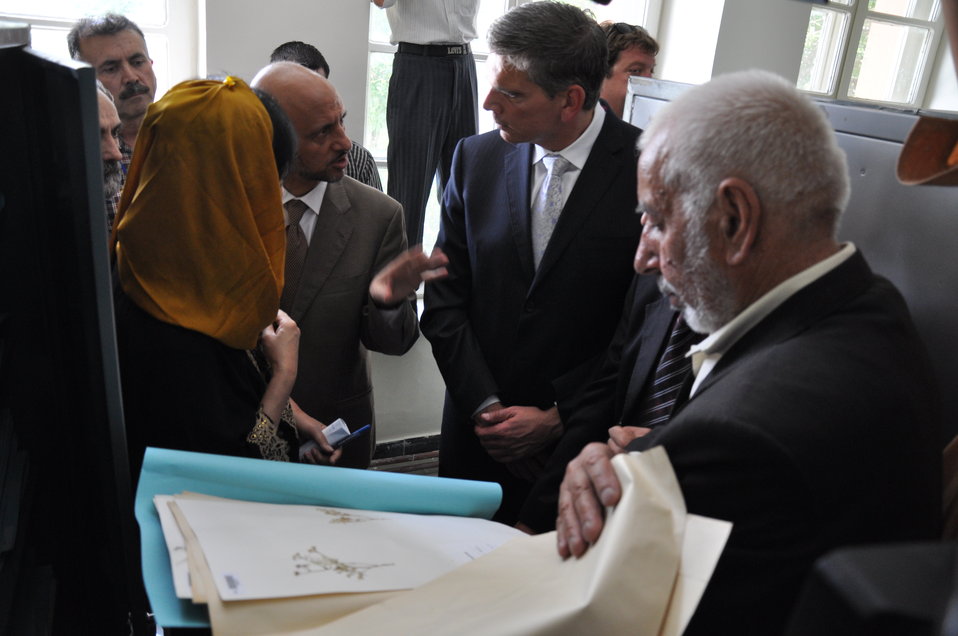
Kabul University Herbarium